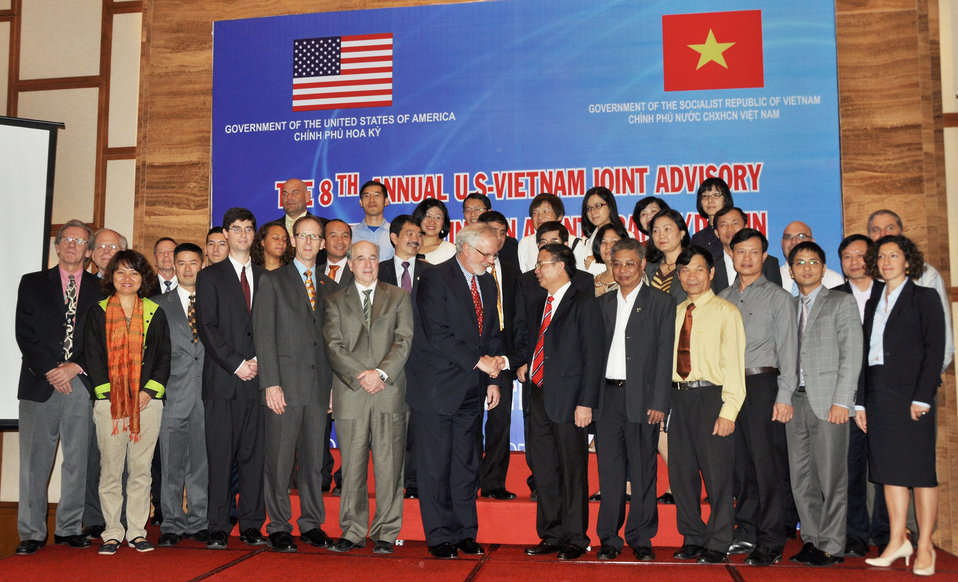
U.S. Ambassador to Vietnam David B. Shear and Dr. Le Ke Son, Office 33 Director, shake hands at the opening ceremony of the 8th JAC meeting.

Danang, December 4, 2013.